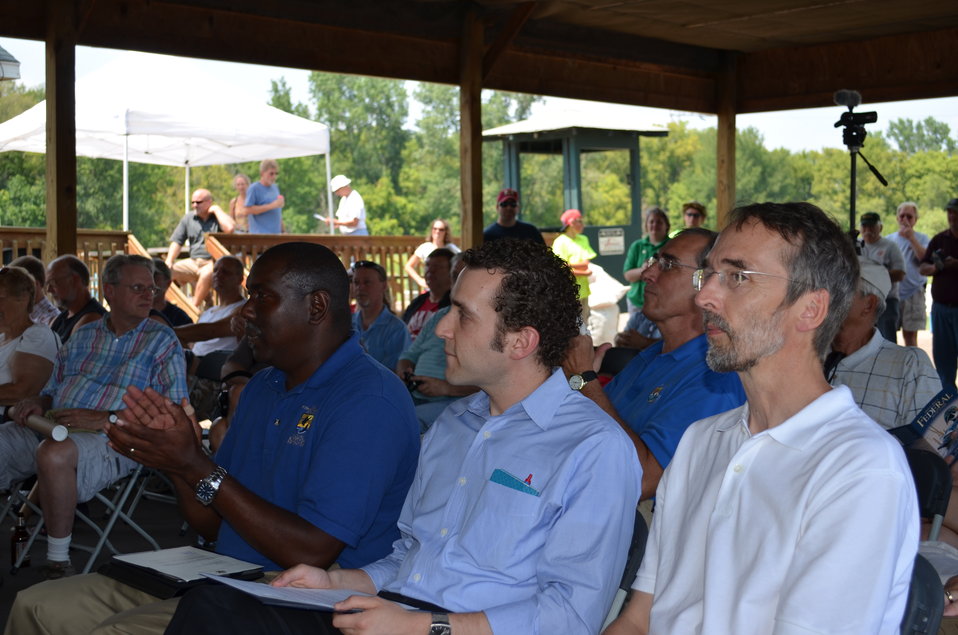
Jerome Ford, Service AD Migratory Bird Program, Adam Schiff from Sen. Klobuchar's office, and Federal Duck Stamp artist Joe Hautman.